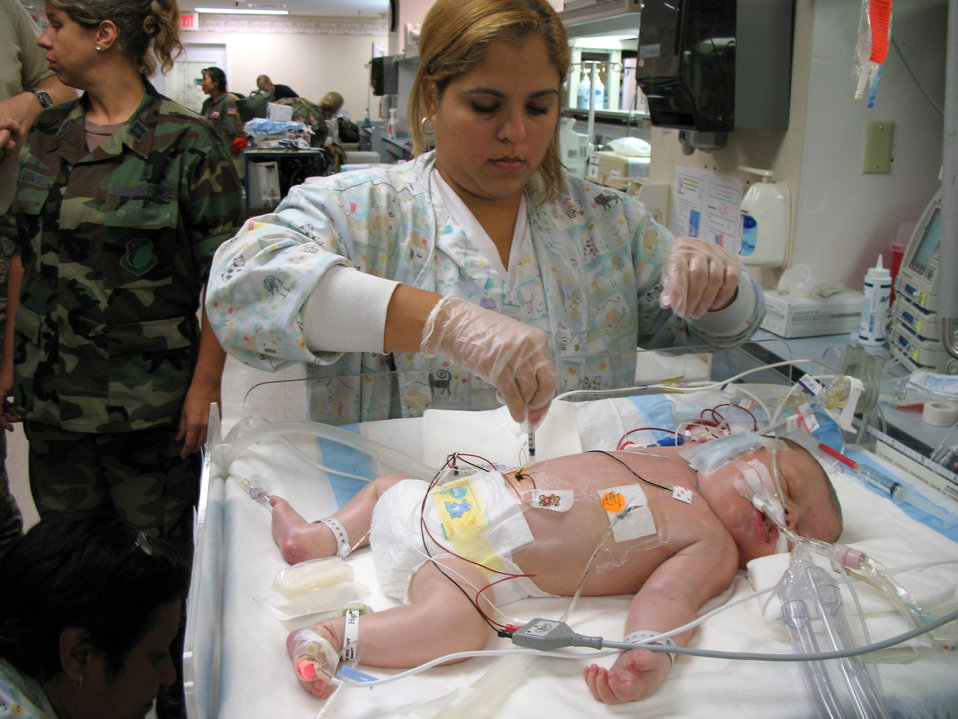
ECMO medical team transports newborn from Puerto Rico

Michelle Sirra takes a blood sample from 3-day-old Stuart Parker in preparation for transfer to an Extracorporeal Membrane Oxygenation unit on Friday, July 21, in San Juan, Puerto Rico. An ECMO team comprised Air Force and Army medical specialists from the Wilford Hall Medical Center at Lackland Air Force Base, Texas, flew to Puerto Rico to transport Stuart to San Antonio for more advanced care. Ms. Sirra is a respiratory therapist in the neonatal intensive care unit at the Hospital Auxilio Mutuo in San Juan.